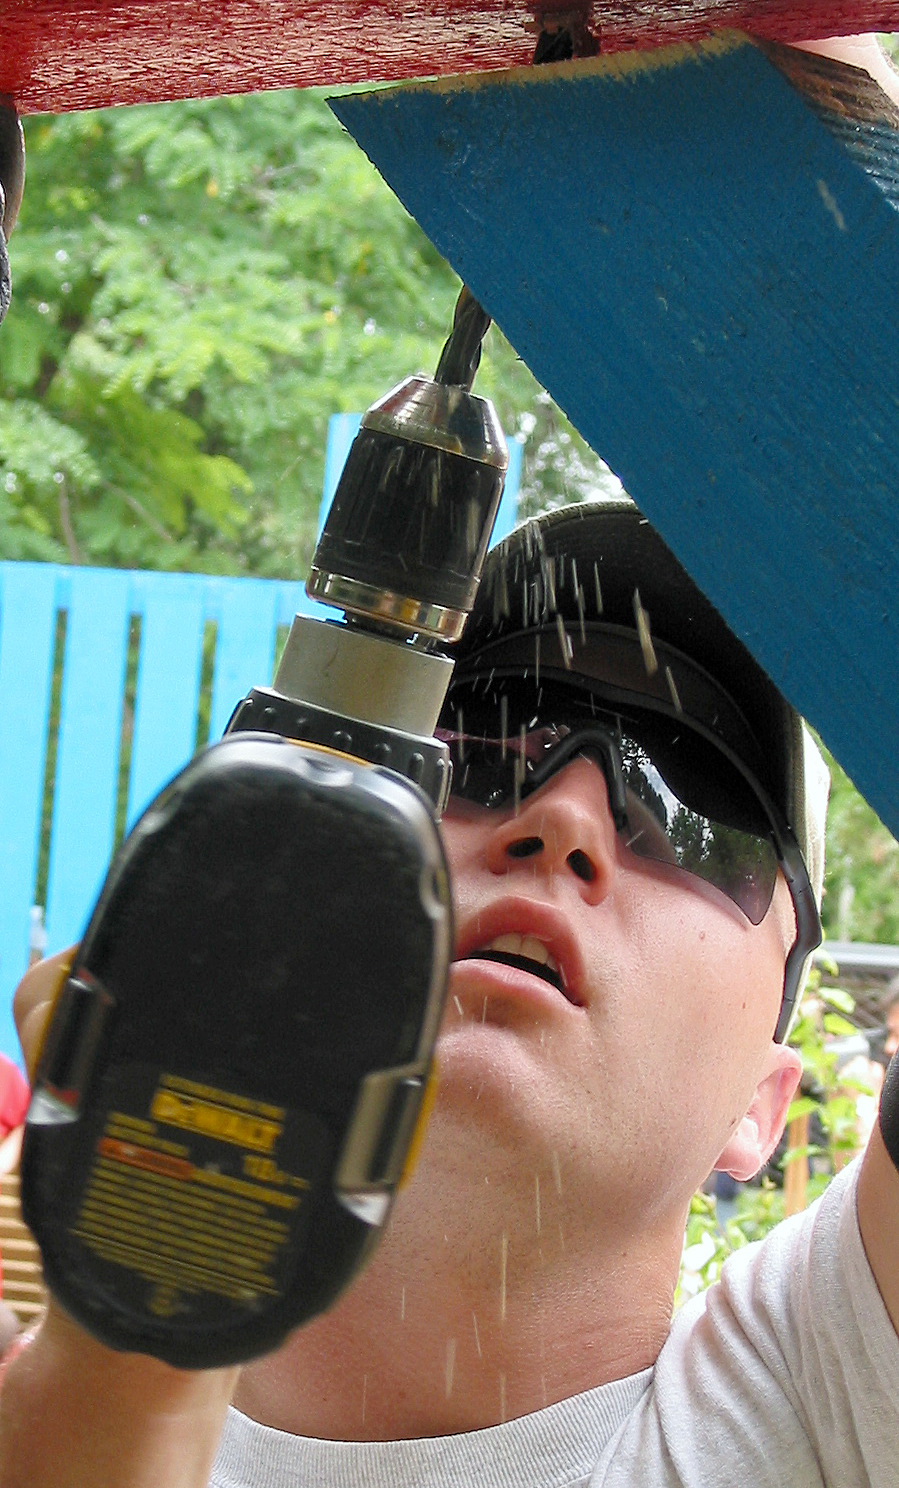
Building swings

OPERATION ENDURING FREEDOM -- Airman 1st Class Dustin Phillips puts the finishing touches on a swing set. More than 68 airmen deployed to Ganci Air Base, Kyrgyzstan, helped build a playground for children at the nearby Kyrgyzstan Tuberculosis Research Institute. Phillips is assigned to the 376th Expeditionary Civil Engineer Squadron at Ganci AB.